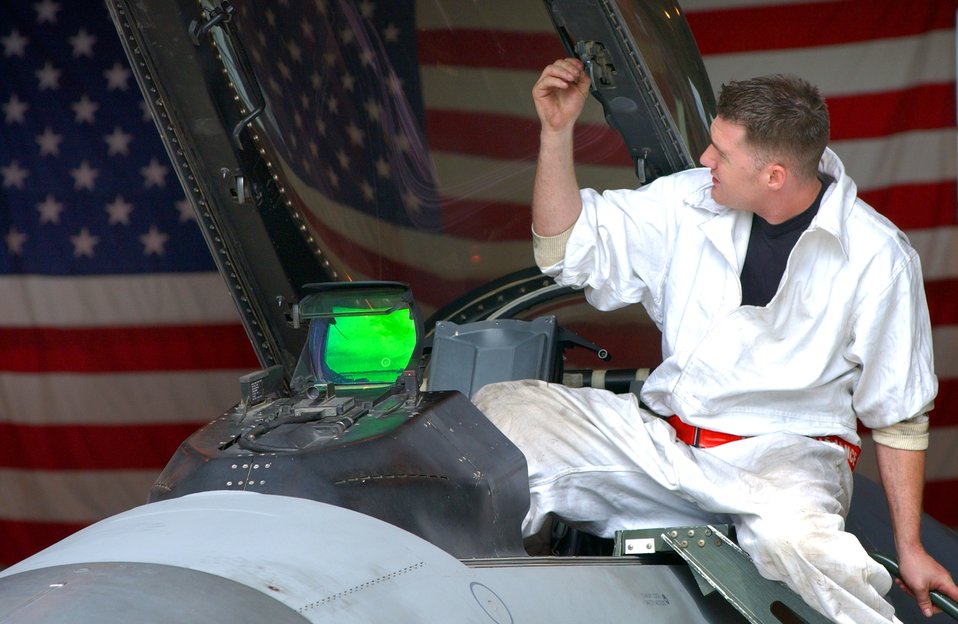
Canopy check

Staff Sgt Patrick McManaman inspects the canopy on an F-16 Fighting Falcon at Aviano Air Base, Italy, Aug. 23 during a phase inspection. The inspection is done every 400 flying hours to ensure the aircraft is mission ready. Sergeant McManaman is with the 31st Maintenance Squadron.